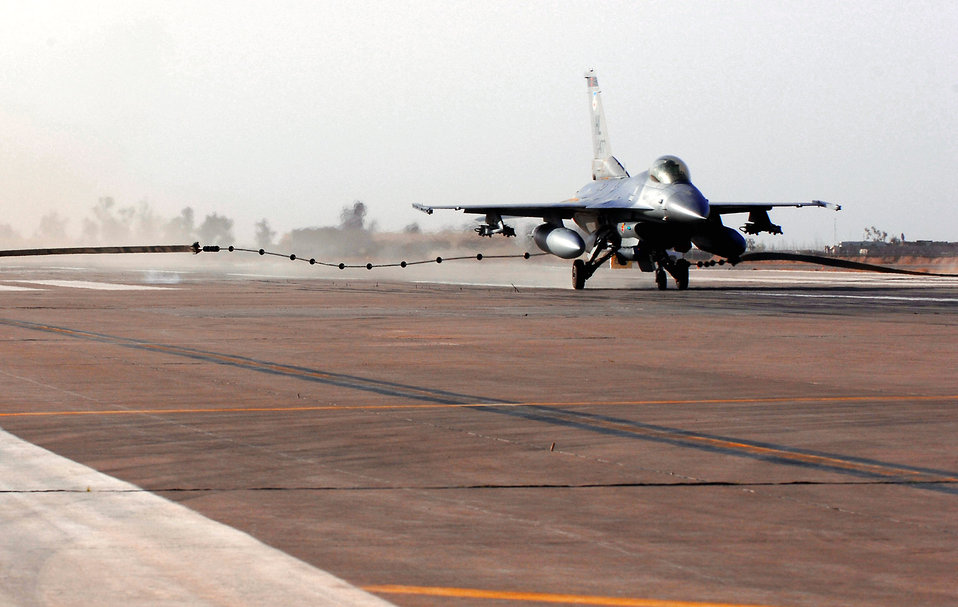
Braking action

An F-16 Fighting Falcon catches an arresting cable during a certification test of the system March 16 at Balad Air Base, Iraq. The system went through a certification test with an actual F-16 Fighting Falcon to ensure its operability following installation by the 332nd Expeditionary Civil Engineer Squadron.